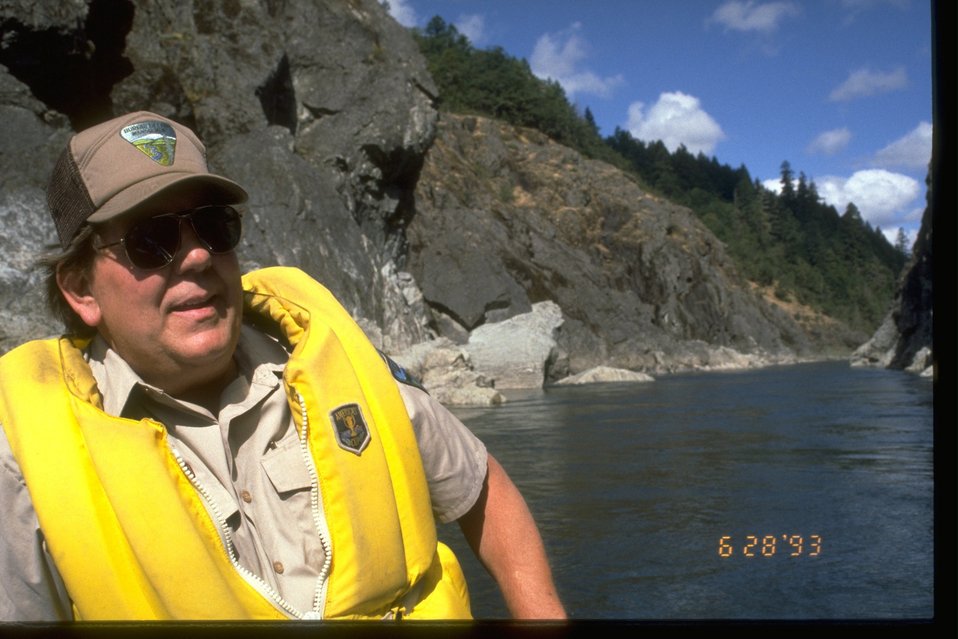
BLM worker floating down the Rogue River in the Hellgate Canyon.